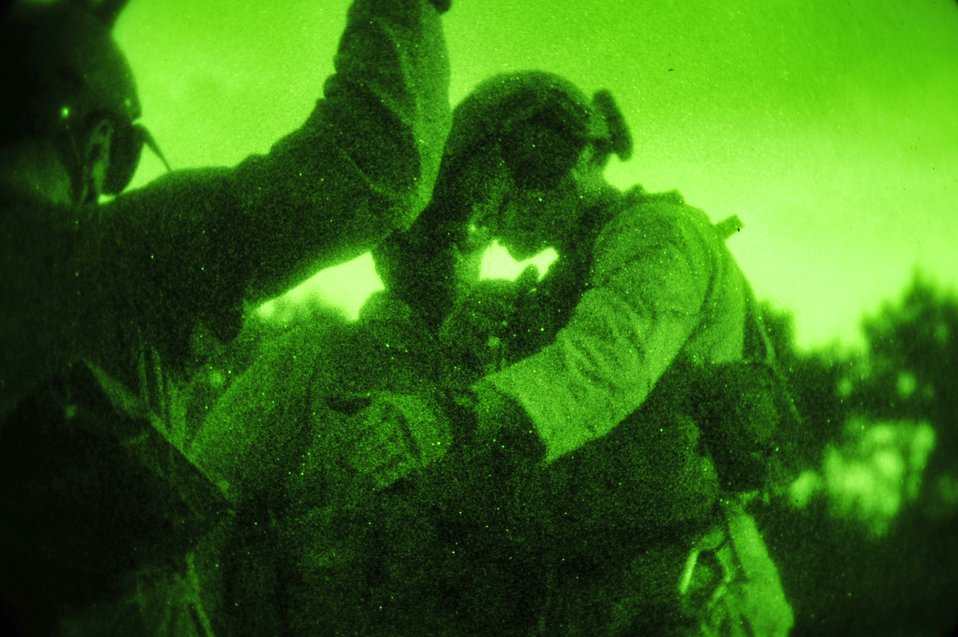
Survival and Evasion Training

A pararescueman from the 31st Rescue Squadron aids members of the 909th Air Refueling Squadron during a simulated KC-135 crash at Kadena Air Base, Japan, March 25, 2010. The training was part of a local operational readiness exercise to test the readiness of Kadena Airmen.